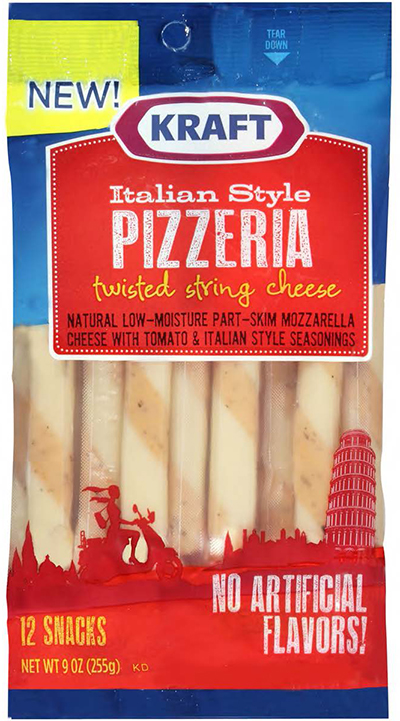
RECALLED – Cheese

October 25, 2013 – Product Recall – Kraft Voluntarily Recalls Some Varieties of Kraft And Polly-O String Cheese And String Cheese Twists Due to Premature Spoilage.